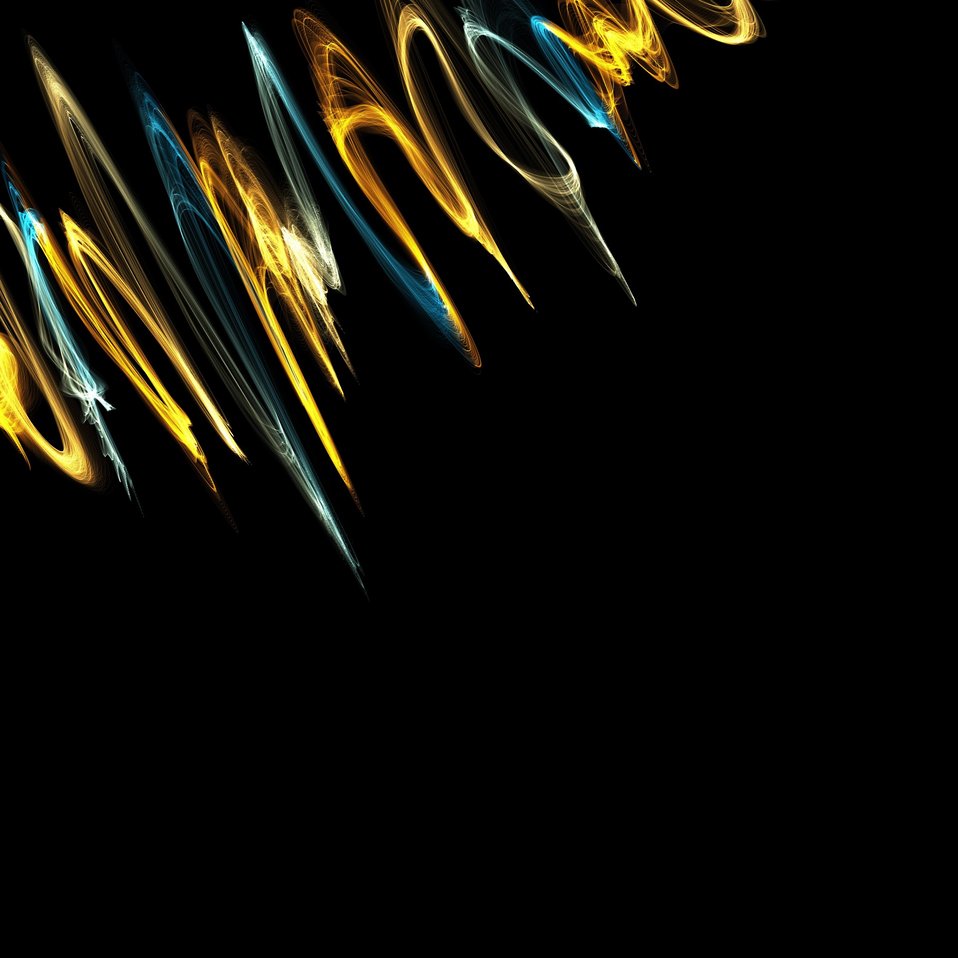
Shock waves background

Colourful digital shock waves set against a solid black background..